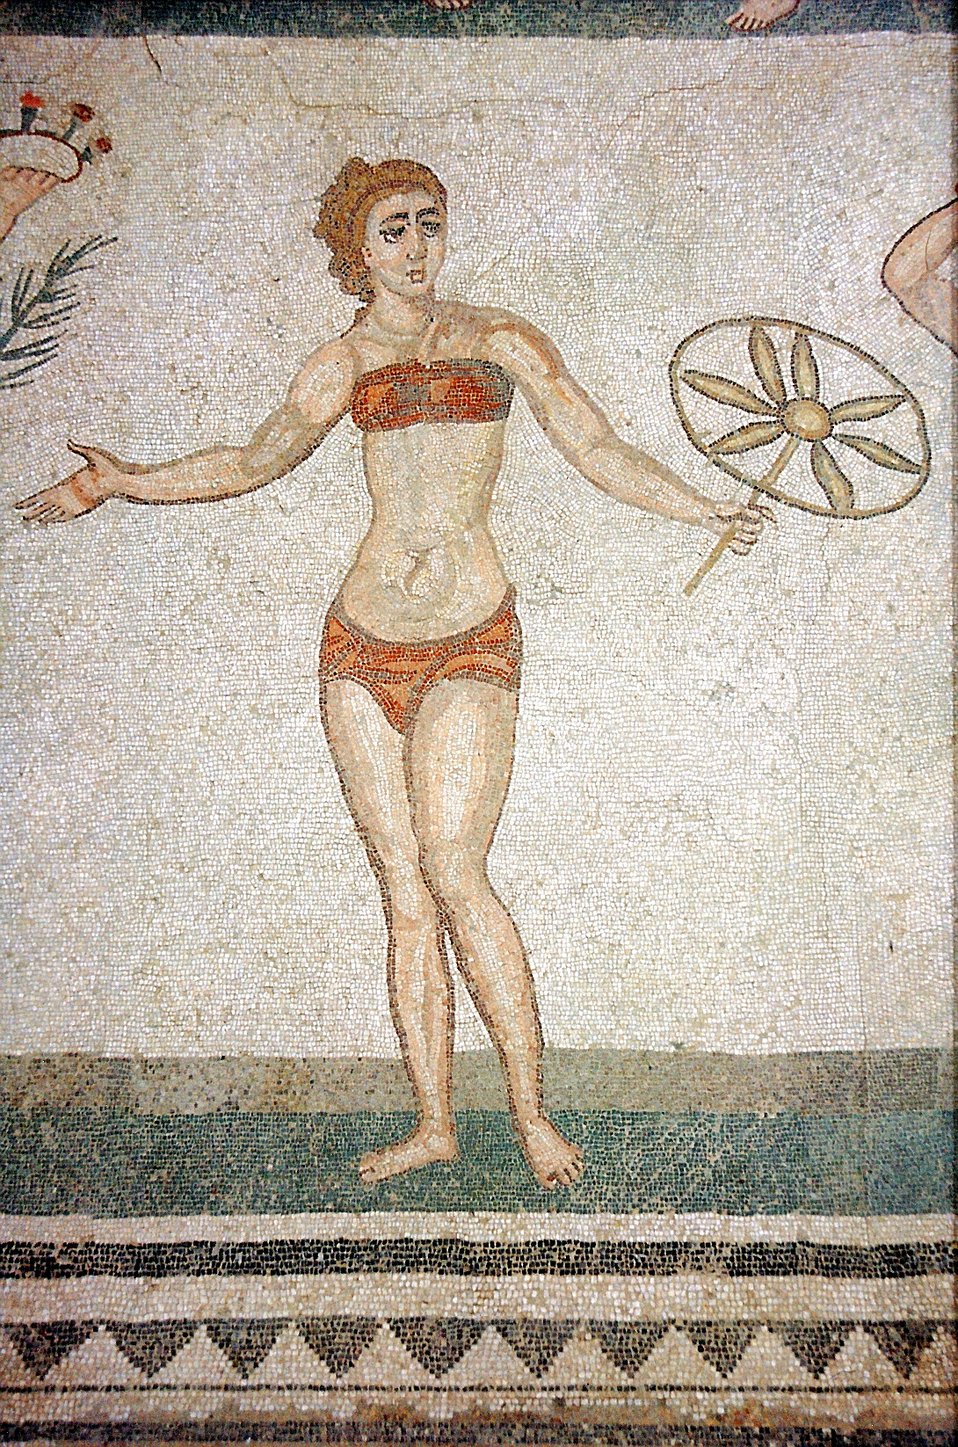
PiazzaArmerina-Mosaik-Bikini